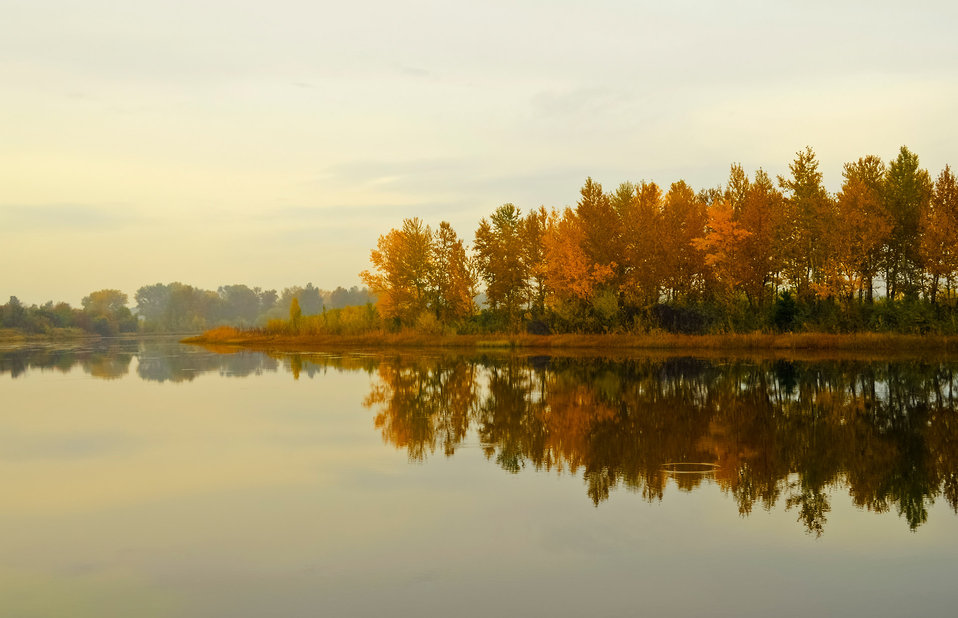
Autumn landscape.